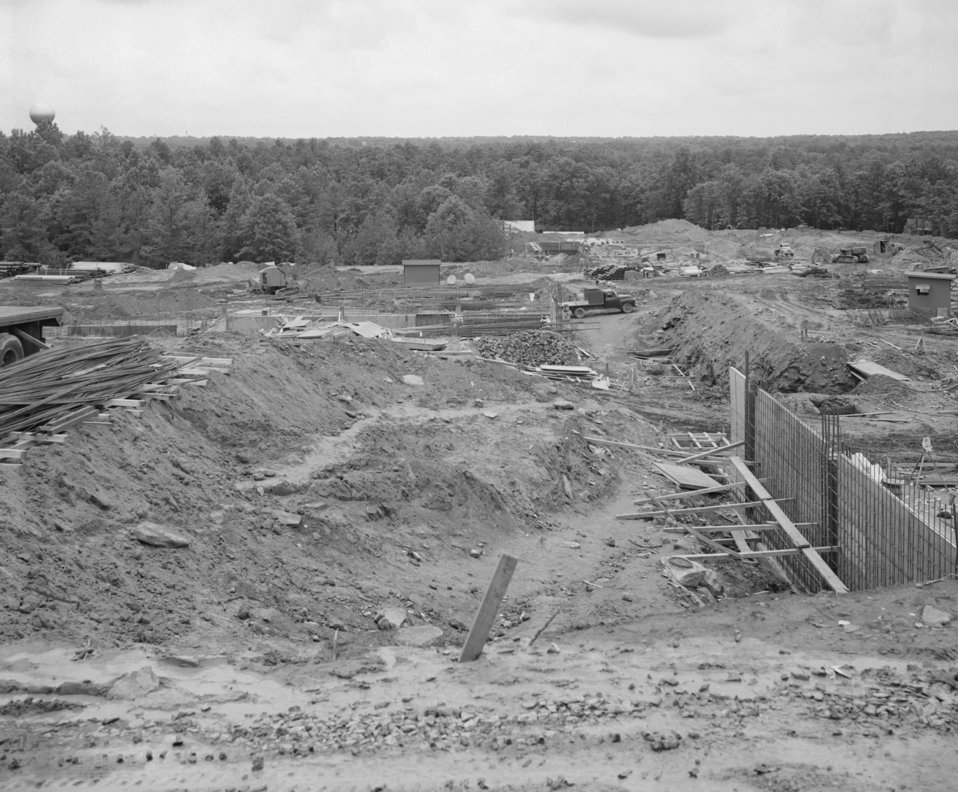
This was the CDC Clifton Road campus while being constructed in 1958.